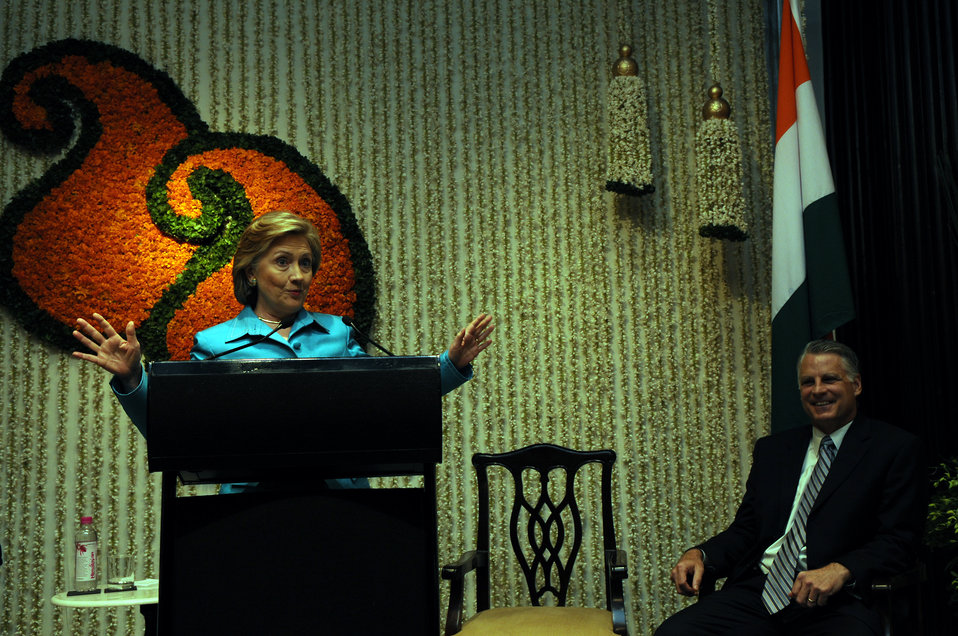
Secretary Clinton Addresses Mumbai Consulate Staff

U.S. Secretary of State Hillary Rodham Clinton addresses Mumbai Consulate General staff during an event at the Crystal Ballroom of the Taj Palace Hotel in Mumbai, India July 19, 2009. Seated on stage is Timothy J. Roemer, U.S. Ambassador-Designate to India.